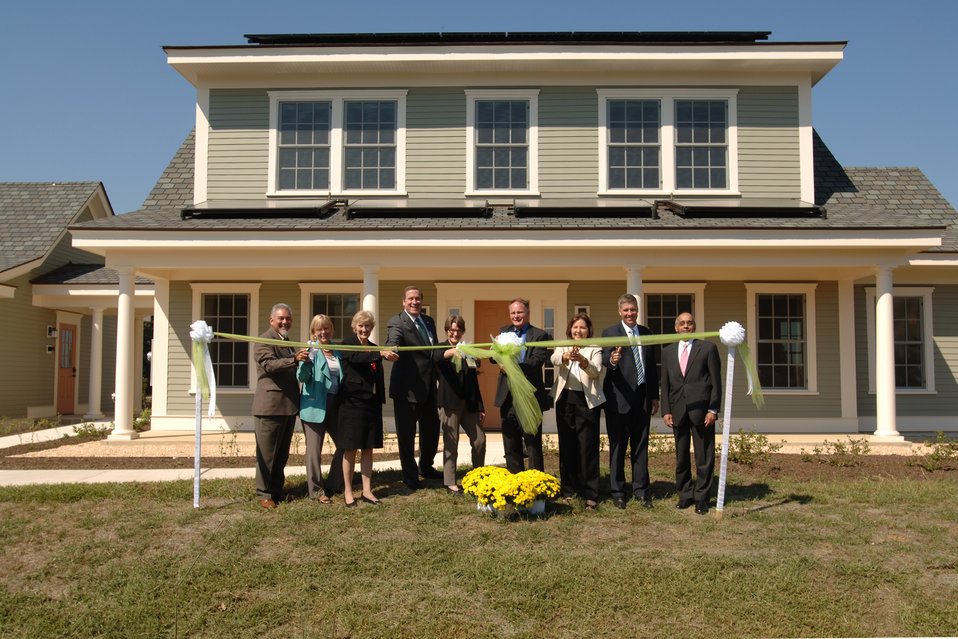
Net-Zero Ribbon Cutting Ceremony

Gaithersburg City Council Member Michael Sesma (far left), Montgomery County Council Member Nancy Floreen ( 2nd from left) and Maryland State Senator Jennie Forehand (3rd from left) , join NIST Director Pat Gallagher (2nd from right), NIST Engineering Laboratory Director Shyam Sunder (far right), NIST Director of the Office of Facilities and Property Management Stella Fiotes (3rd from right), Chief of the Energy and Environment Division of the NIST Engineering Laboratory Hunter Fanney (4th from right), and invited dignitaries at the ribbon cutting for the NIST Net Zero Energy Residential Test Facility.